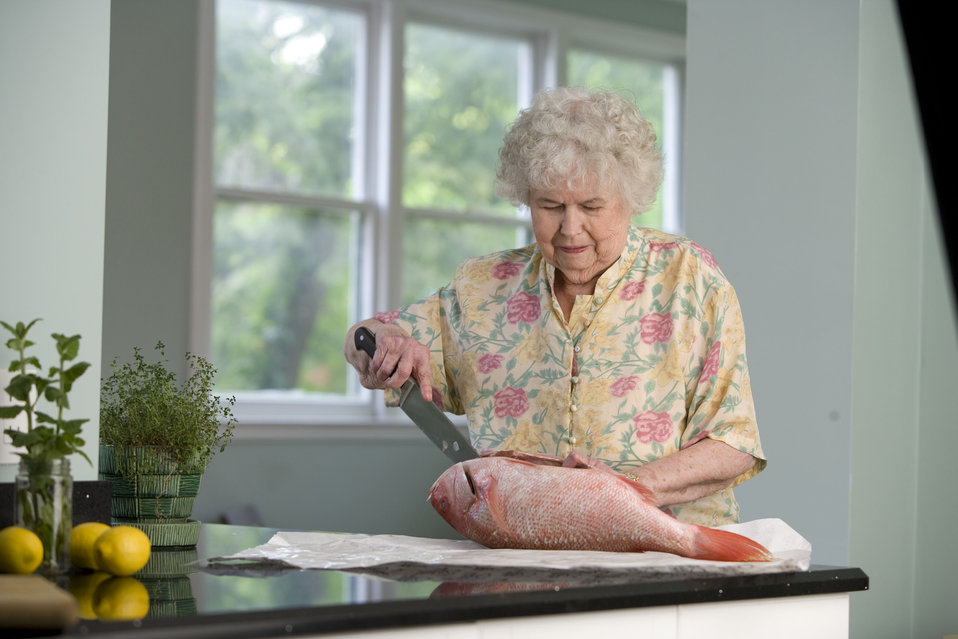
Here, an elderly woman was in the process of preparing a fresh fish on her clean kitchen counter. Carefully using a large knife, the woman had cut into the fish's belly, and would subsequently extract the internal organs prior to finally cutting away the fillets.